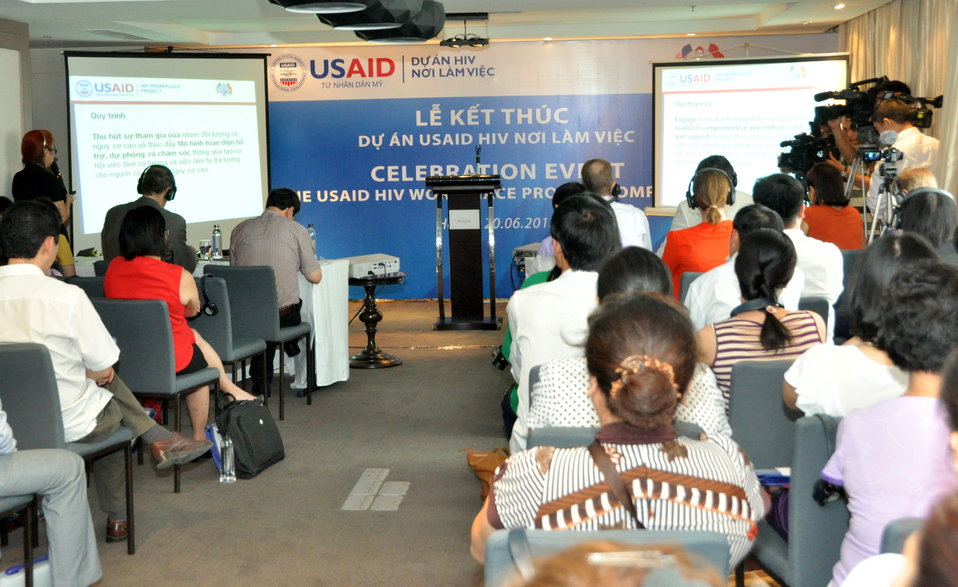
Significant outcomes achieved by the USAID HIV Workplace Project are presented during the completion event.

Hanoi, June 20, 2013.